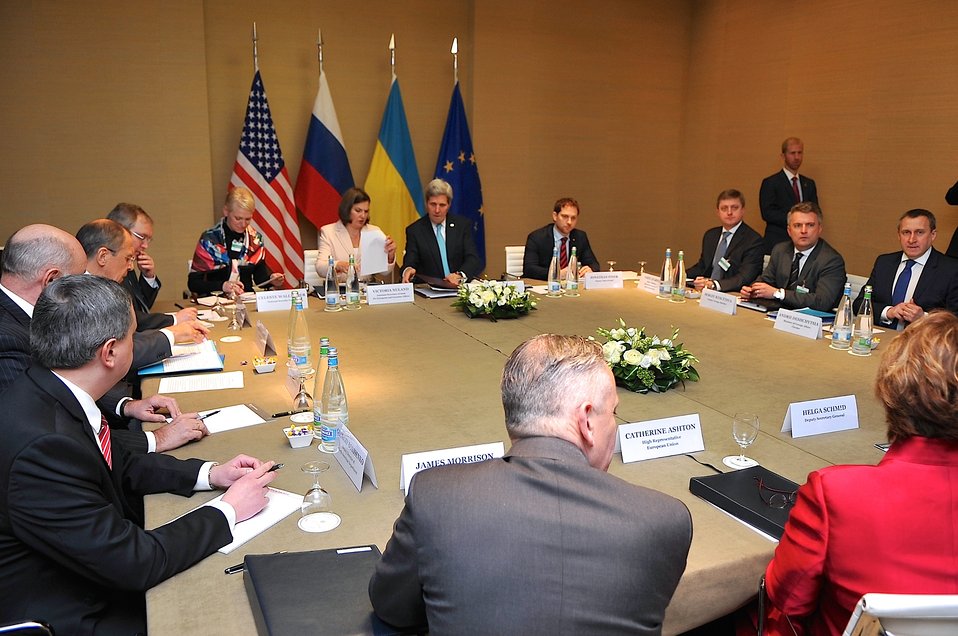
U.S., Russia, Ukraine, EU Hold Quadrilateral Meeting in Geneva

U.S. Secretary of State, Russian Foreign Minister Sergey Lavrov, Ukrainian Foreign Minister Andrii Deshchytsia, and European Union High Representative Catherine Ashton sit across from one another in Geneva, Switzerland, on April 17, 2014, before a quadrilateral meeting focused on Ukraine.